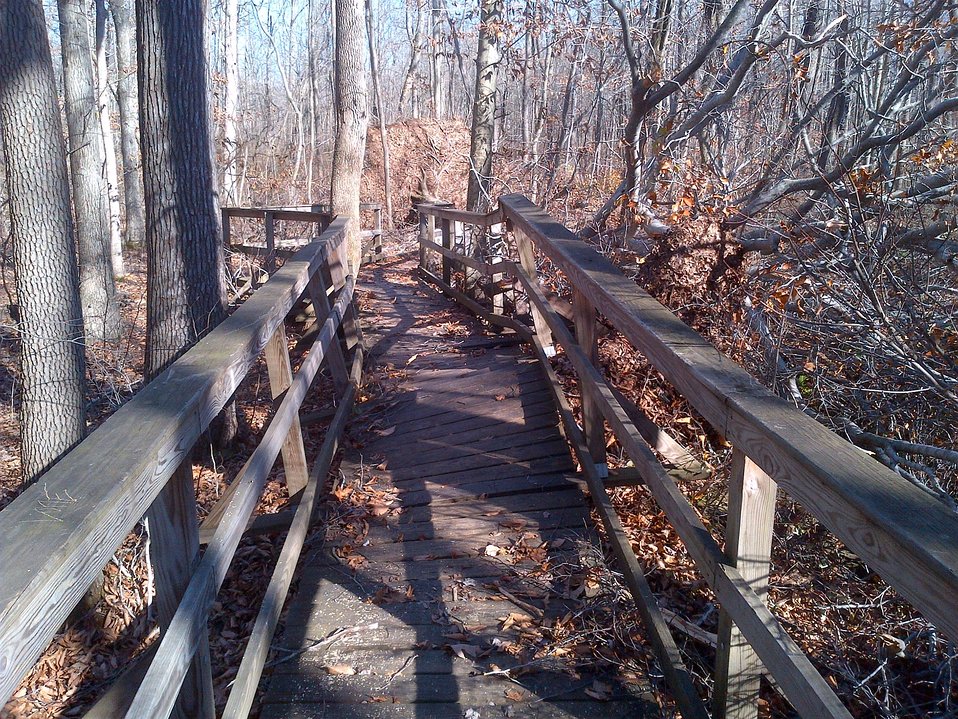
Hurricane Sandy caused damage at Great Swamp National Wildlife Refuge (NJ)

Storm damage to one of the boardwalks at the Wildlife Observation Center.